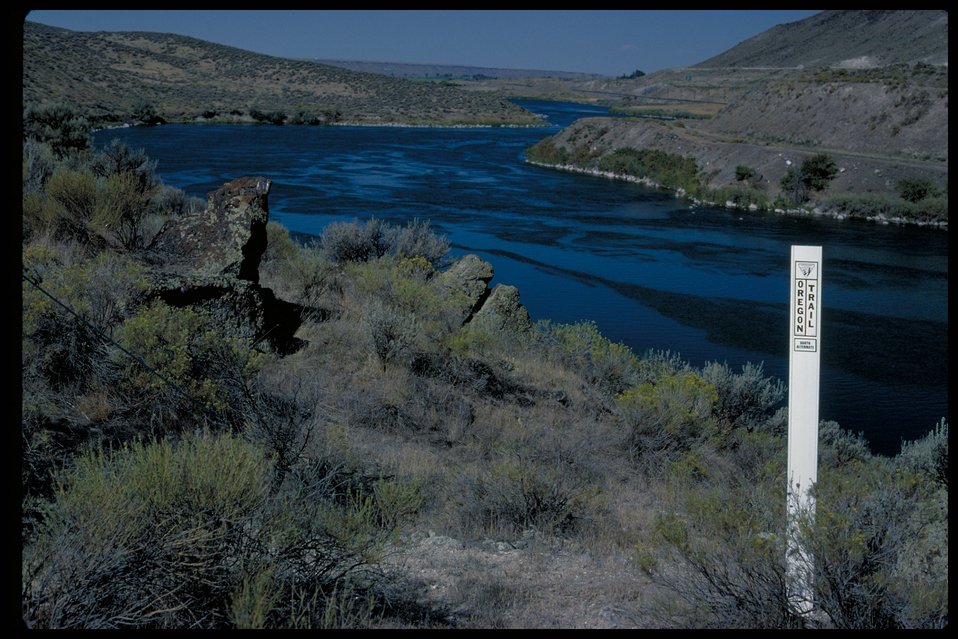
The Narrows Oregon Trail Lower Snake River District